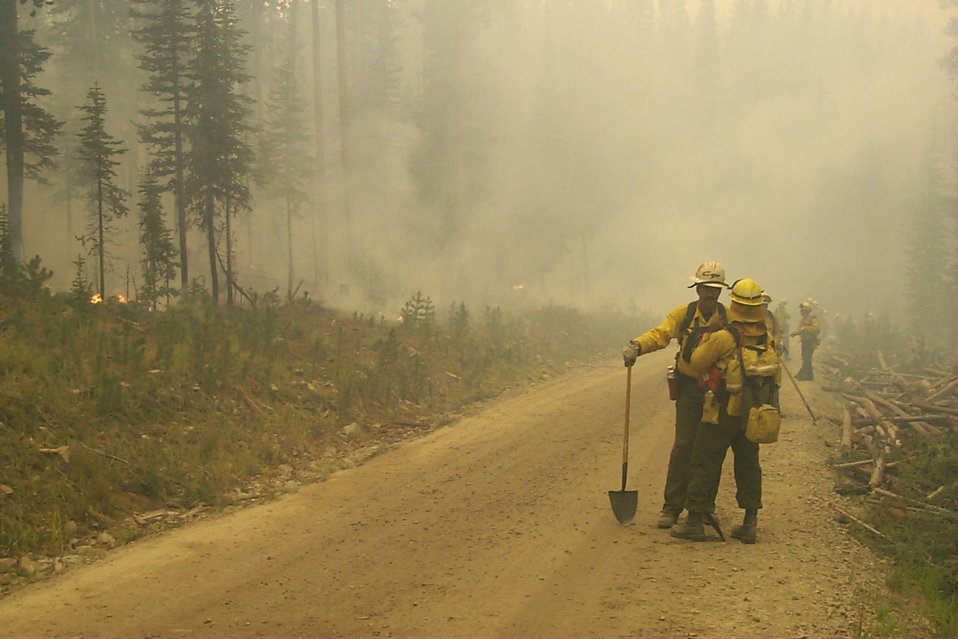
Fire fighters Fire Clearwater Fire Salmon Field Office USRD Upper Snake River District